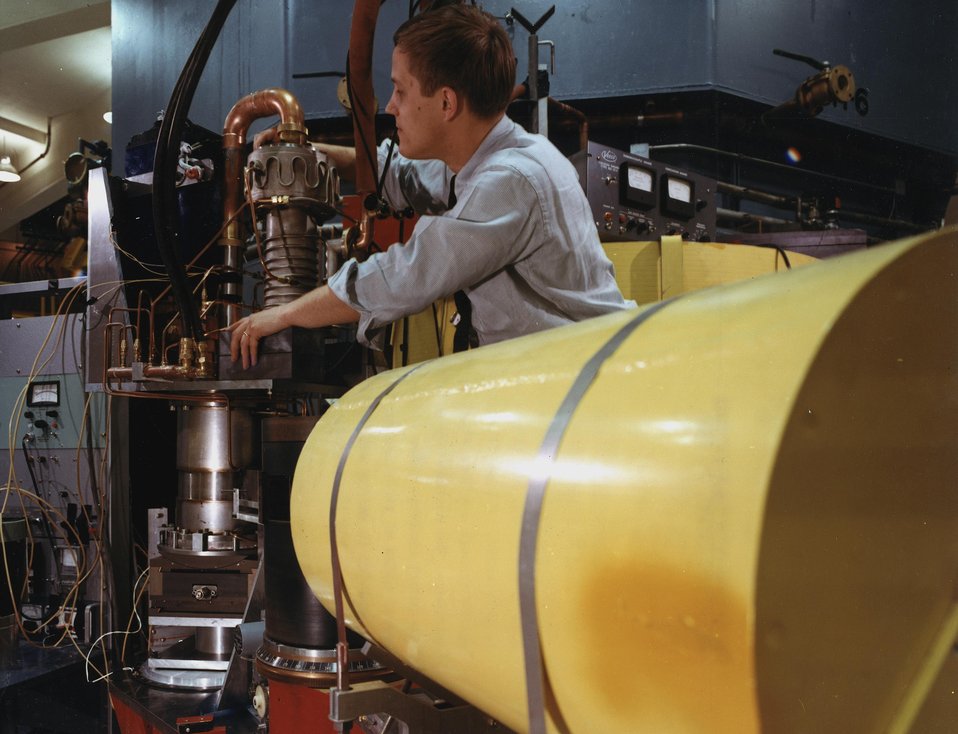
The furnace. c. 1967